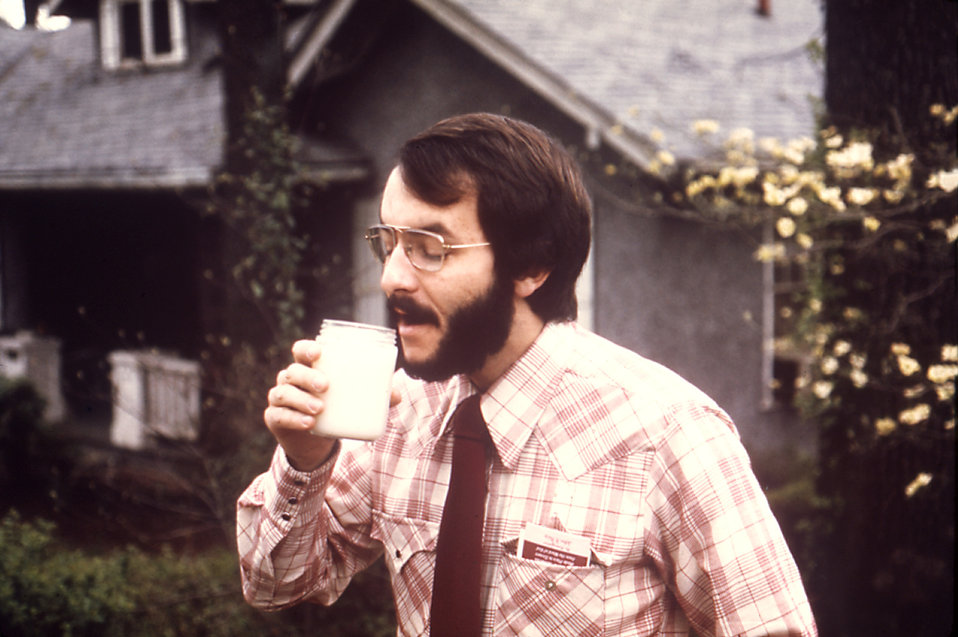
CDC epidemiologist, Dr. Ed Baker, is examining a sample of the local Chattanooga, Tenn. water in 1976 for evidence of chlordane.